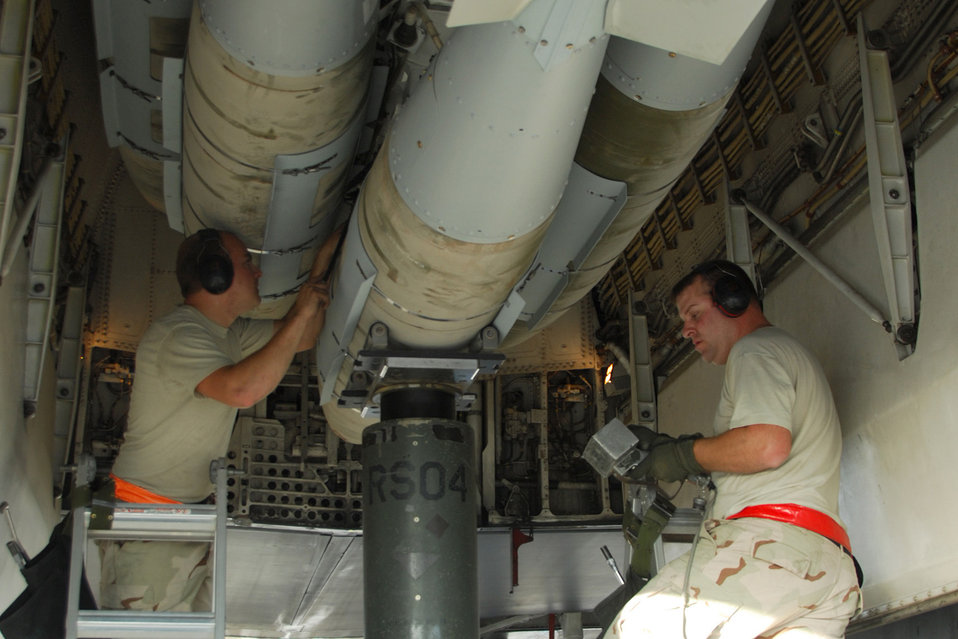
Airpower Summary for February 8

A Weapons Load Crew with the 379th Expeditionary Aircraft Maintenance Squadron at a Southwest Asia air base, loads two-thousand pound bombs onto a B-1B Lancer to prepare it for a mission December 21. Staff Sgt. Brandon Neitz (left) and Technical Sgt. James Sheldon (right) attach the bomb to the conventional rotary launcher inside the bomb bay of the aircraft.